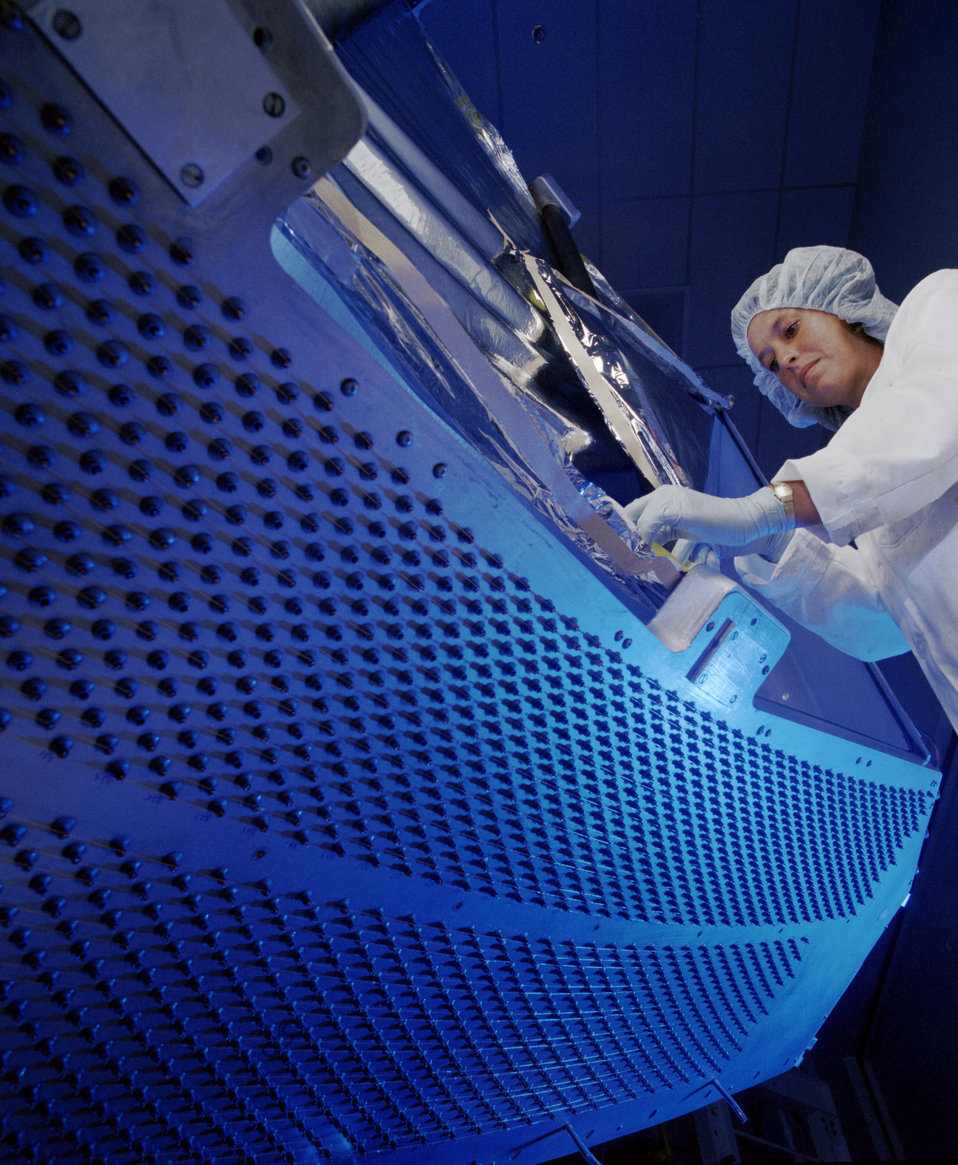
Jefferson Lab Thomas Jefferson National Accelerator Facility, in Virginia

94-509 DOE photo by Lynn Freeny 1994